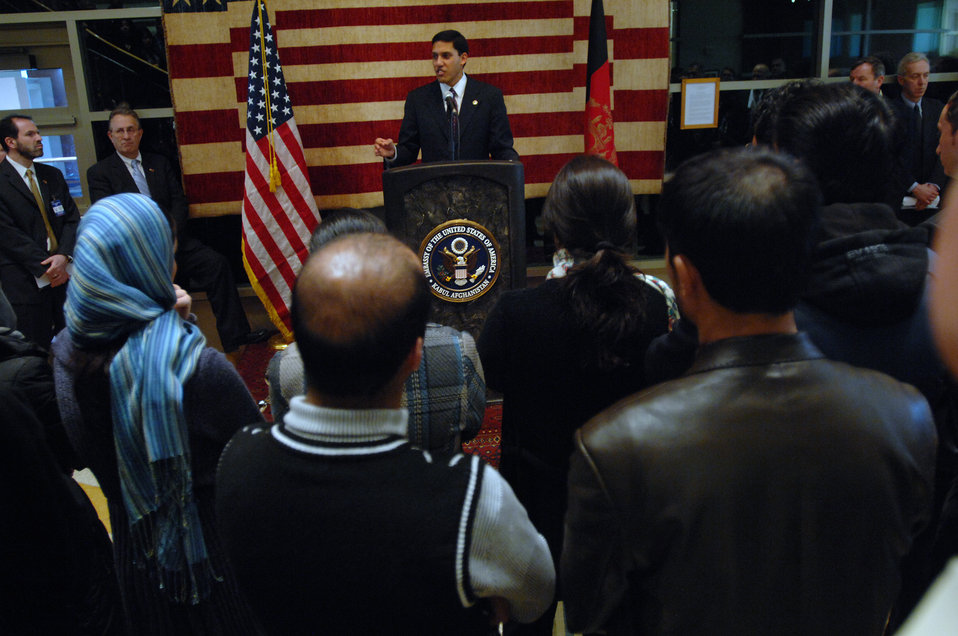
Shah

Dr. Rajiv Shah, Administrator of the United States Agency for International Development (USAID), holds a town hall meeting at the U.S. Embassy in Kabul, Afghanistan on Tuesday, February 8, 2011. (S.K. Vemmer/Department of State)